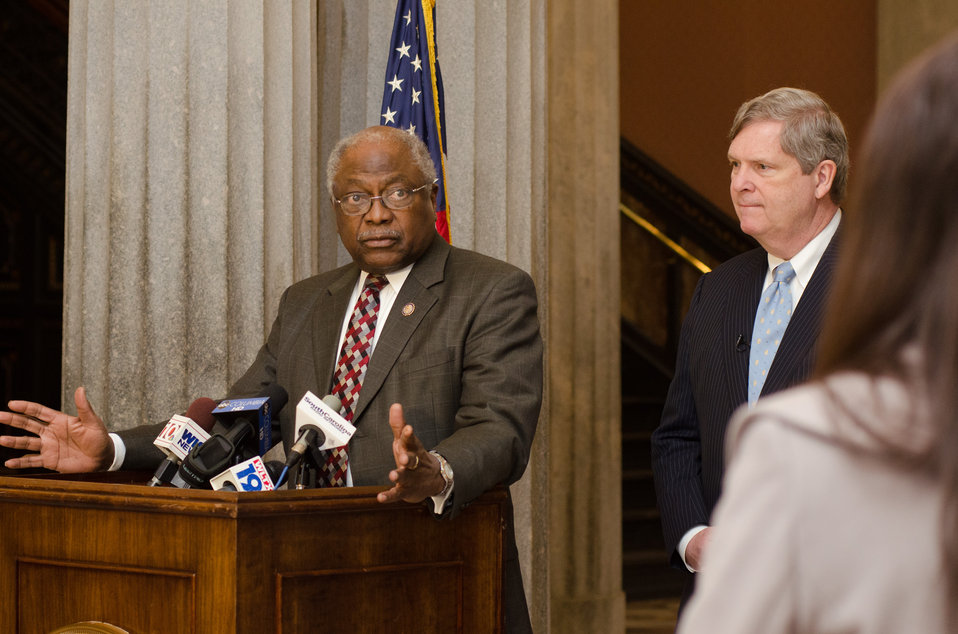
Agriculture Secretary Tom Vilsack (right) and South Carolina Congressman James E. Clyburn (podium) hold a press conference in the South Caroline State Capitol in Columbia, SC after the kick off of the Strike Force Initiative For Rural Growth and Opportunity at Voorhees College in Denmark, SC, on Tuesday, Mar. 26, 2013.